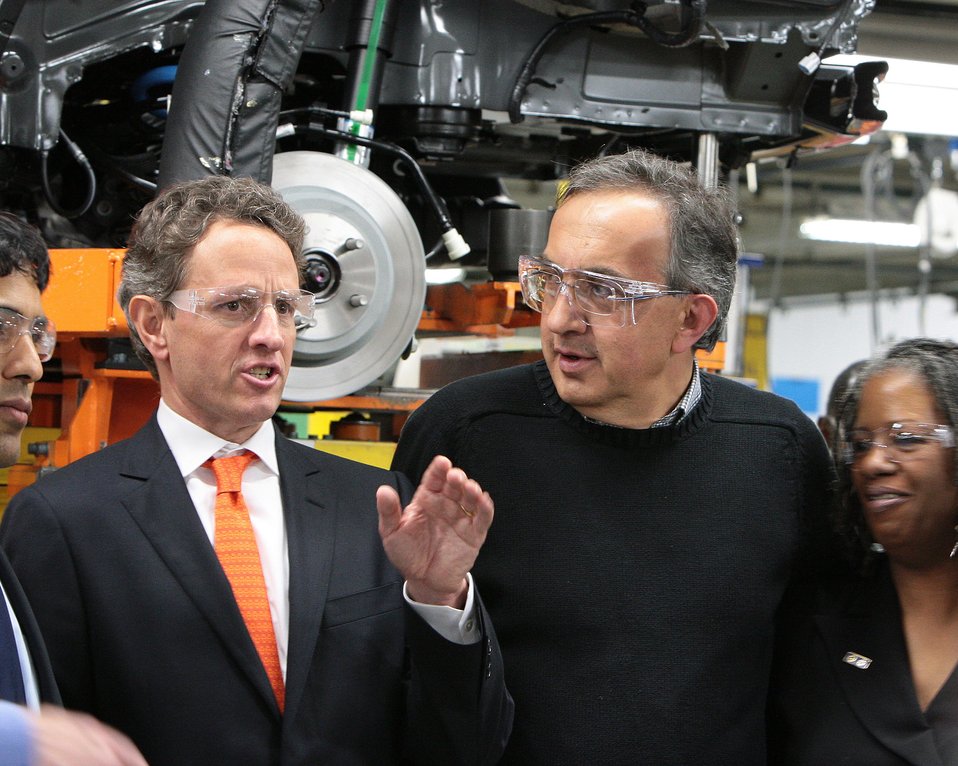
Secretary Geithner Visits Detroit

Secretary Tim Geithner talking with plant workers and leadership while on a tour of Jefferson North Assembly Plant (JNAP).